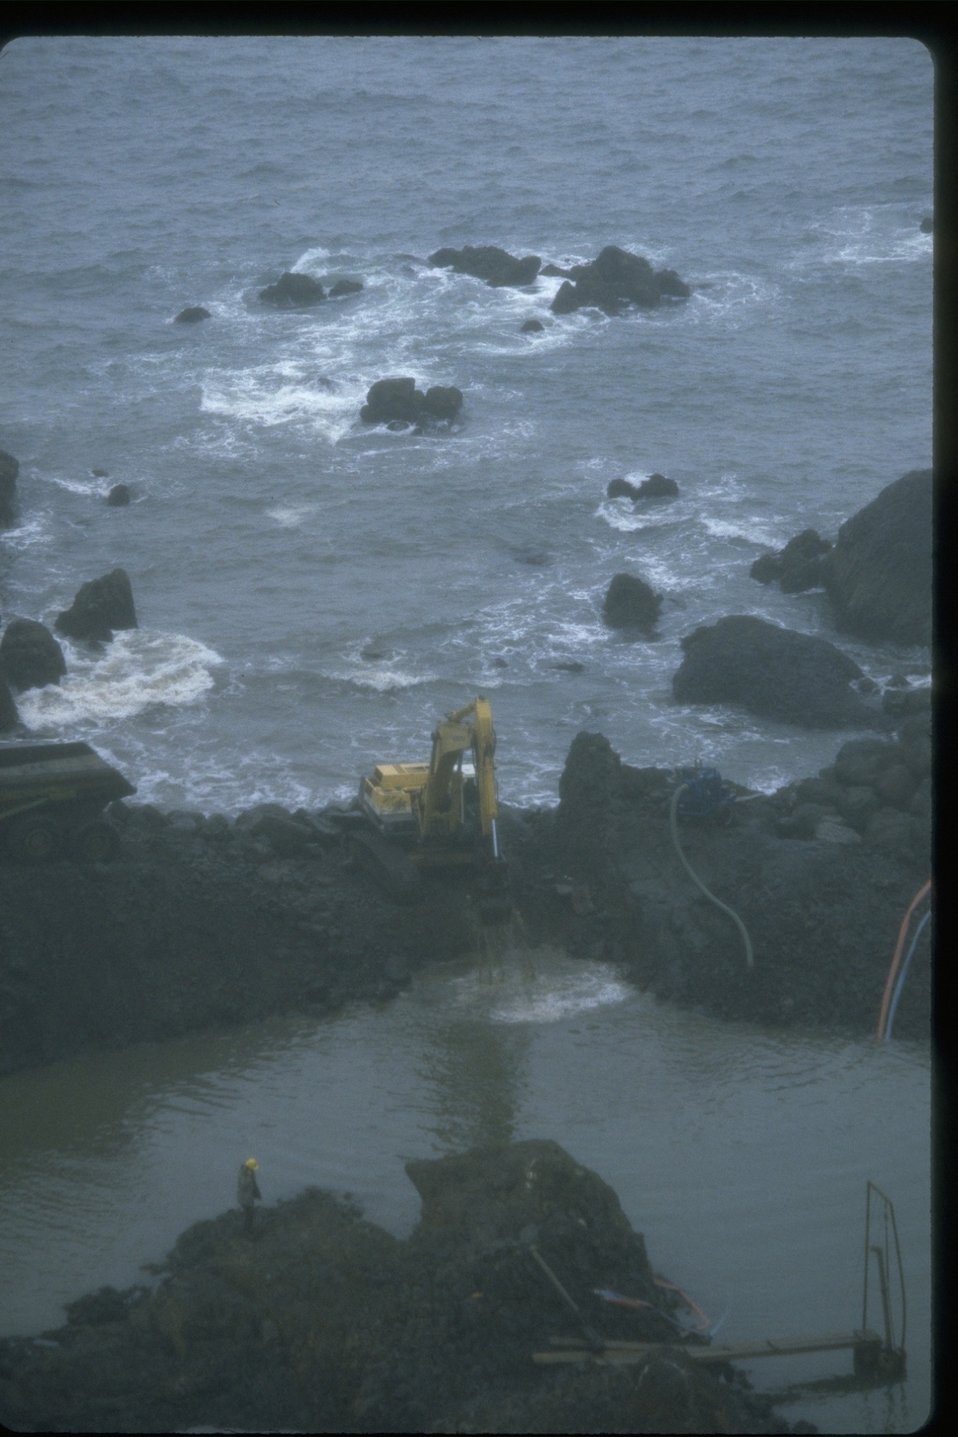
Breaching the Sea Wall and loading a truck during the construction at Quarry Cove in the rain.